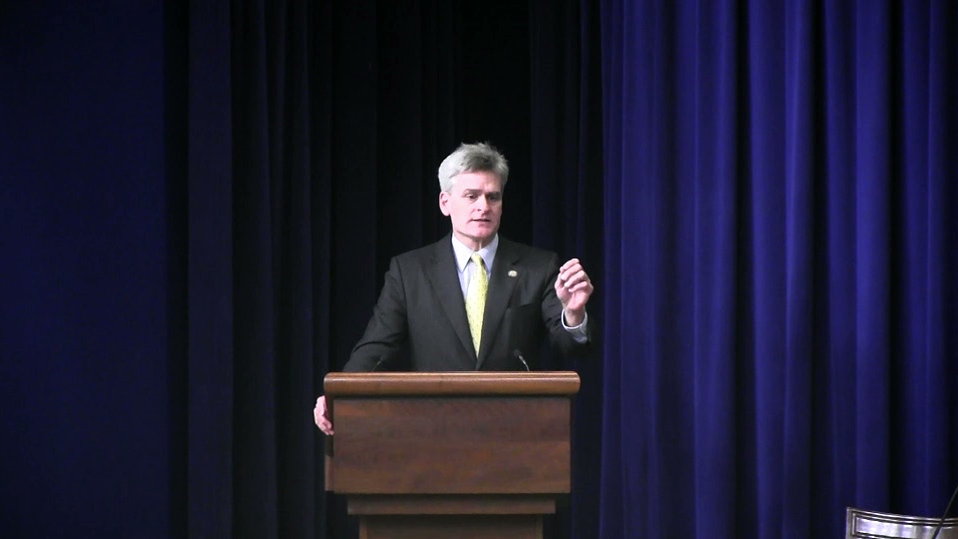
Cassidy2